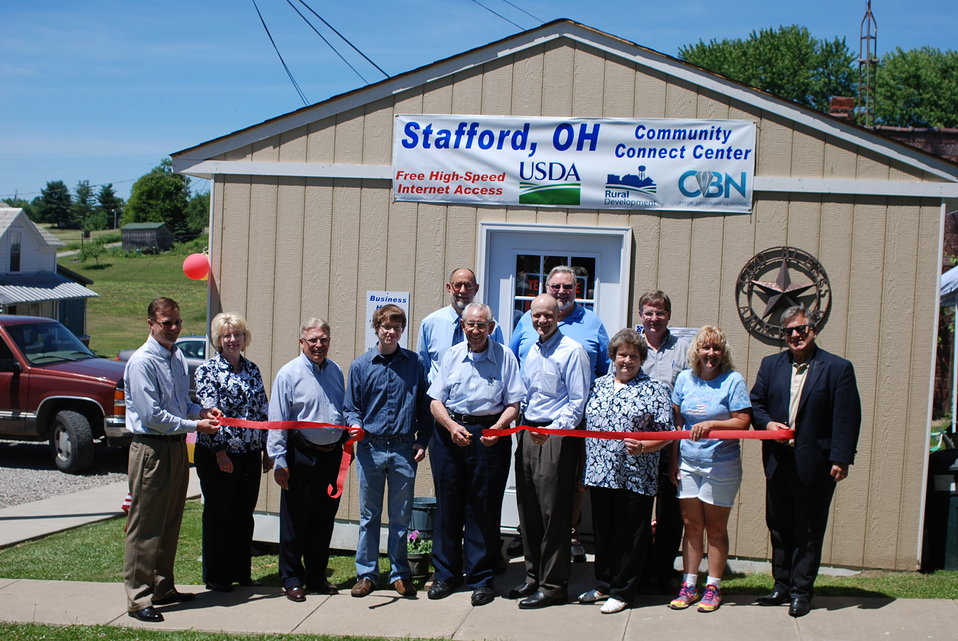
20130604 Stafford Ohio Community Connect ribbon cutting

A ribbon cutting ceremony was held for the new Stafford, OH Community Connect Center. The center will provide free broadband for two years. . (Far right, State Director Tony Logan. Front row, fourth from the right, U.S. Department of Agriculture (USDA) Acting Under Secretary for Rural Development (RD) Doug O’Brien).